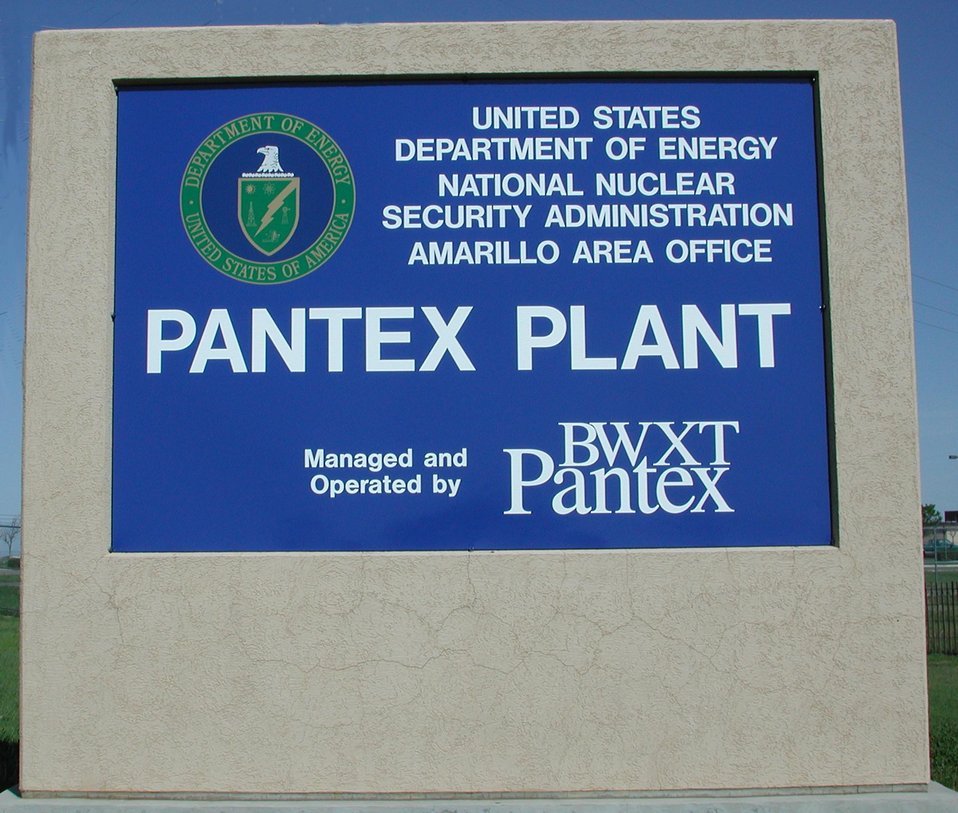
THE EAST GATE TO THE DEPARTMENT OF ENERGY'S PANTEXT PLANT.

THE PANTEX PLANT, LOCATED ON THE HIGH PLAINS OF THE TEXAS PANHANDLE, NEAR AMARILLO, IS CHARGED WITH MAINTAINING THE SAFETY, SECURITY AND RELIABILITY OF AMERICA'S NUCLEAR WEAPONS STOCKPILE. THE FACILITY HAS FIVE PRIMARY OPERATIONAL MISSIONS WHICH INCLUDE NUCLEAR WEAPONS ASSEMBLY, DISASSEMBLE, EVALUATION, HIGH EXPLOSIVE RESEARCH AND DEVELOPMENT AND INTERIM PLUTONIUM PIT STORAGE.